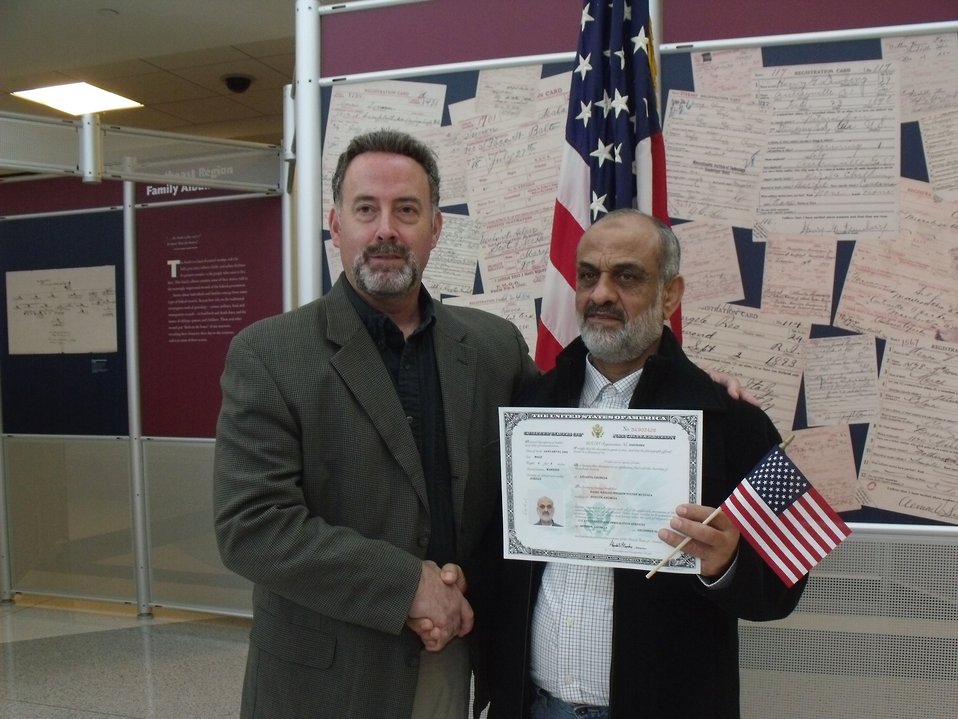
New Citizens